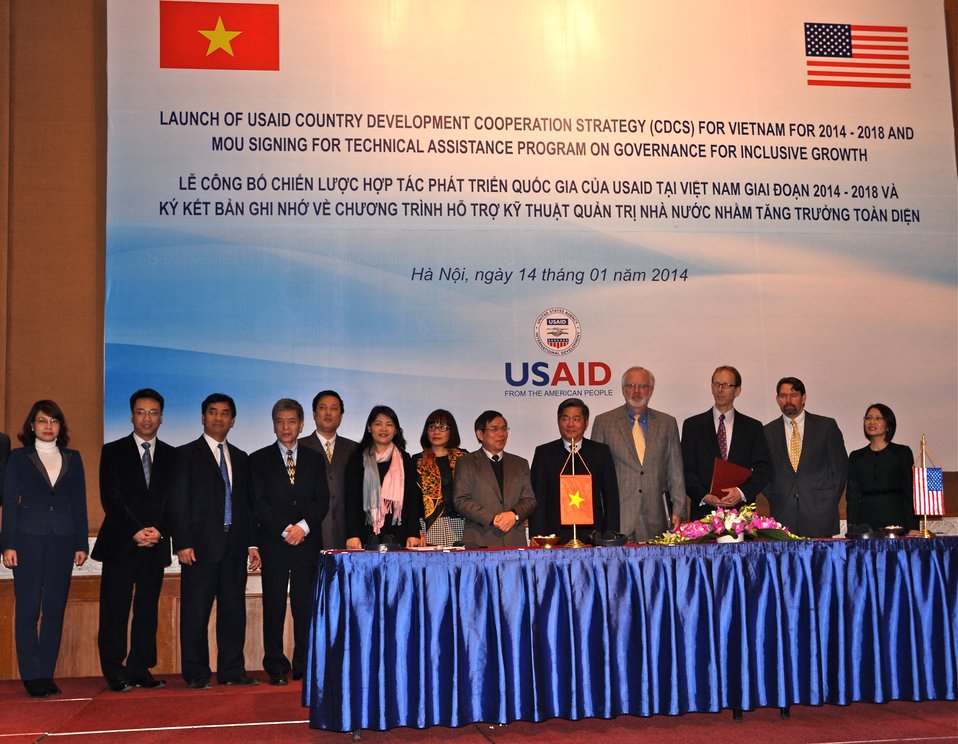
USAID and Vietnam’ Ministry of Justice sign an MoU to begin USAID’s new Governance for Inclusive Growth program.